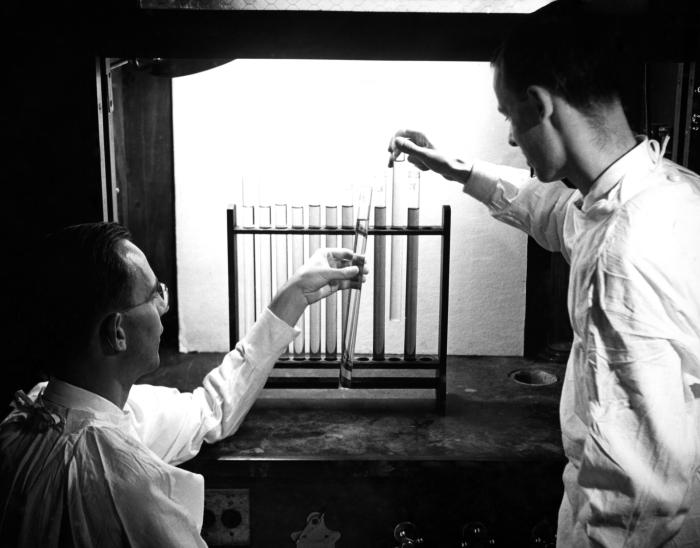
This November, 1943 photograph was provided by the Center for Disease Control's (CDC), National Institute for Occupational Safety and Health (NIOSH). The image depicted two industrial chemists in the process of analyzing test tube filled with solutions of TNT (trinitrotoluene), and Tetryl, which is an organic explosive compound that is potentially an irritant known to cause industrial dermatitis. The tests being performed induced color changes in the solutions, which were then compared, and the results recorded. Note that neither scientist was wearing a protective filtered breathing mask, goggles, or gloves while carrying out these experiments.